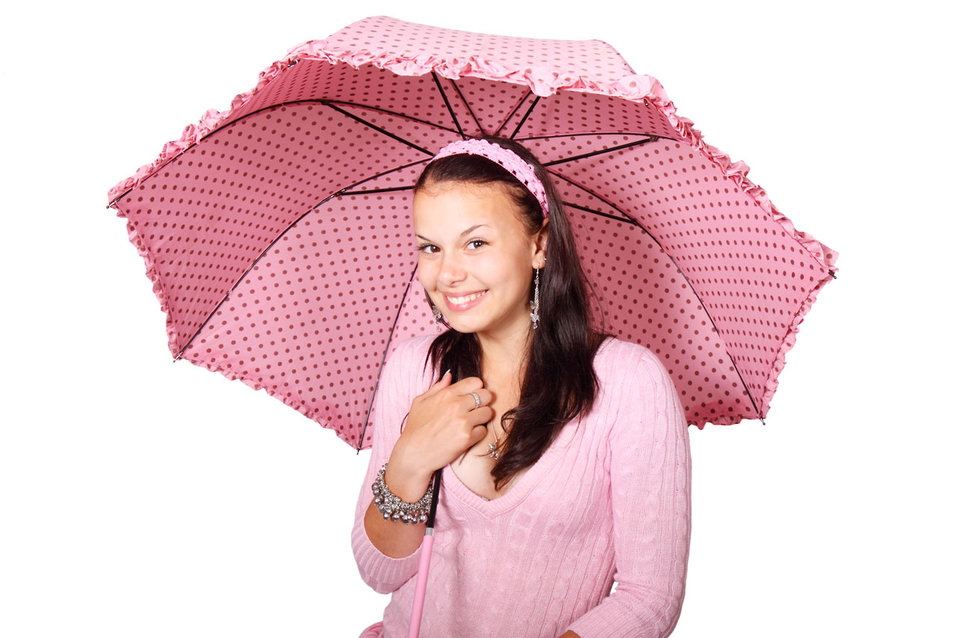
Woman with dotted umbrella

Young woman with pink dotted umbrella isolated on white background.